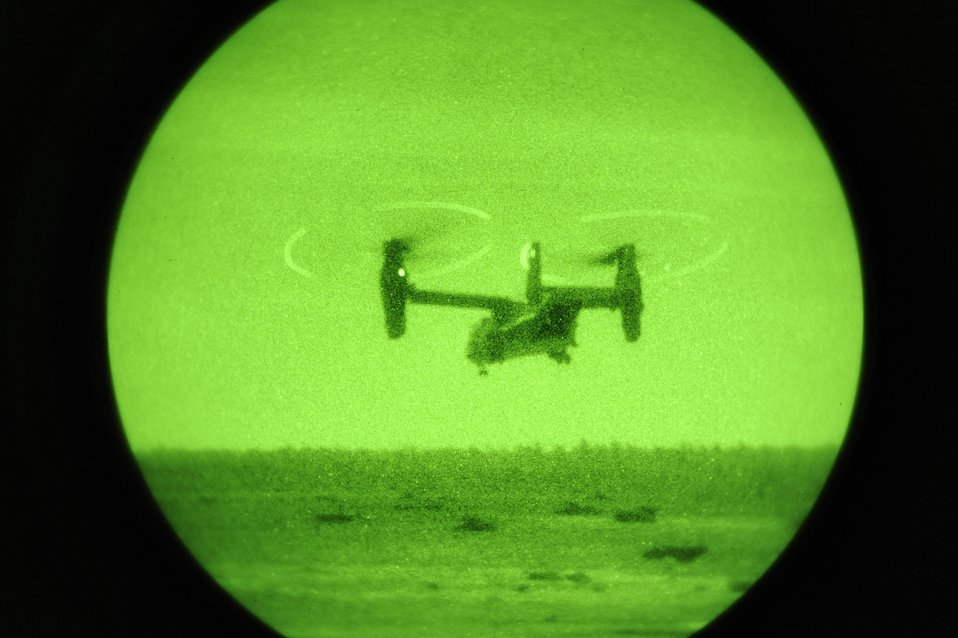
Emerald Warrior

A CV-22 Osprey takes off after deploying a quick reaction force Feb. 9 during an Emerald Warrior Exercise training scenario. The quick reaction force will advance forward to identify where enemy fire came from and engage. Air Force Special Operations Command officials are hosting Emerald Warrior to train forces in combat scenarios. The exercise runs until Feb. 13.